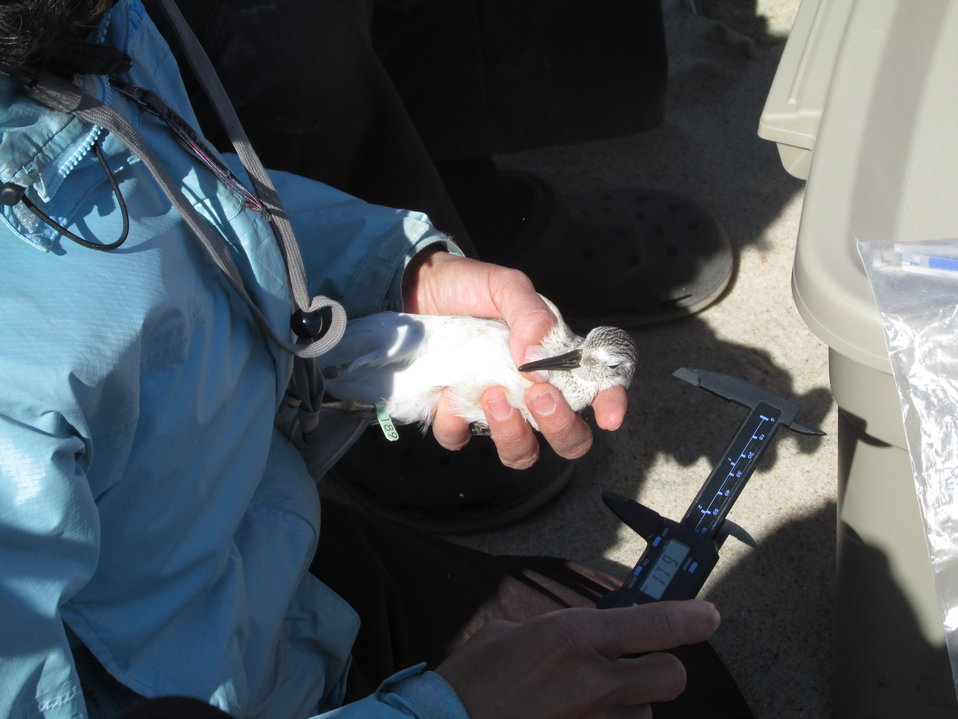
Red knot cannon netting in Cape Cod

Dorie Stolley of Goldenrod Foundation measures the length of the head and beak of a juvenile red knot.